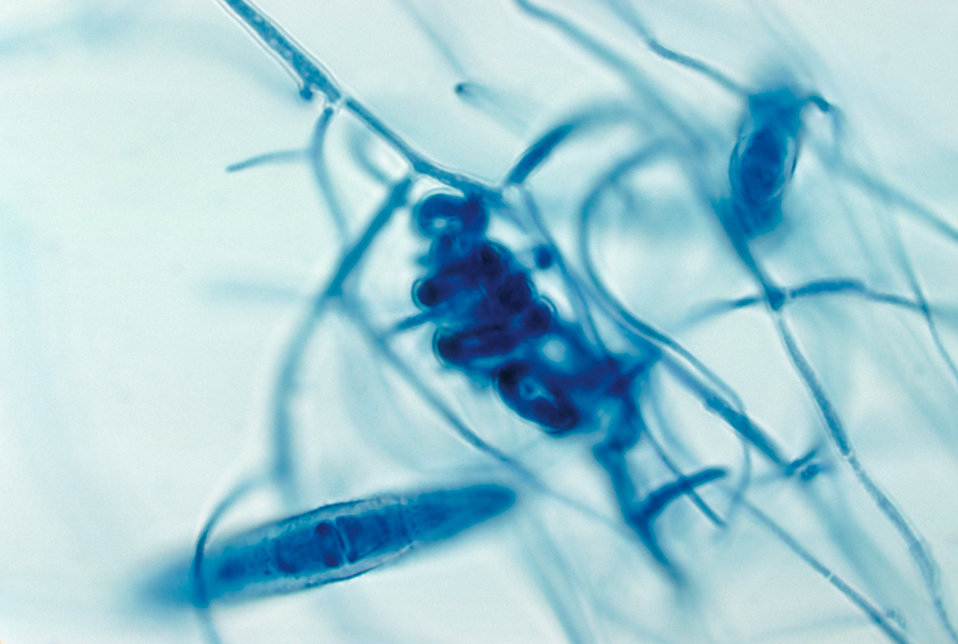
This photomicrograph shows the cleistothecium of the fungus Arthroderma grubyi, formerly Nannizzia grubyia.